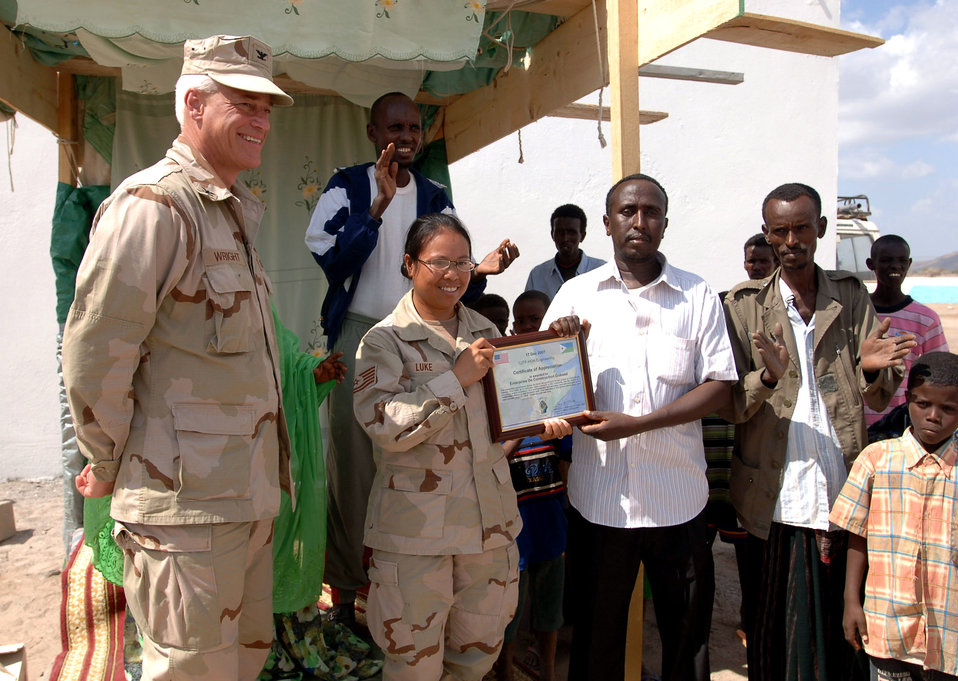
Servicemembers celebrate school dedication in Djibouti

Navy Capt. Bob Wright, (left to right) looks on as Tech. Sgt. Marrisa Luke presents a certificate of appreciation to the owner of Enterprise De Construction Go Baad for a job well done following the dedication ceremony Dec. 17 in Djibouti. Captain Wright is the Combined Joint Task Force-Horn of Africa J-9 Strategic Communications director, and Sergeant Luke is a CJTF-HOA engineer.